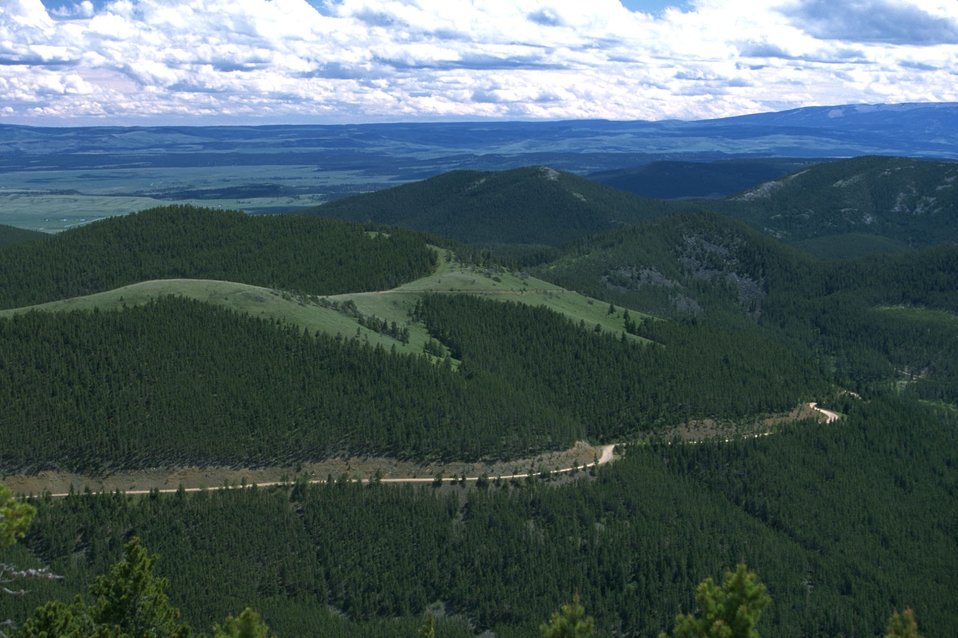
Road running through the Judith Mountains